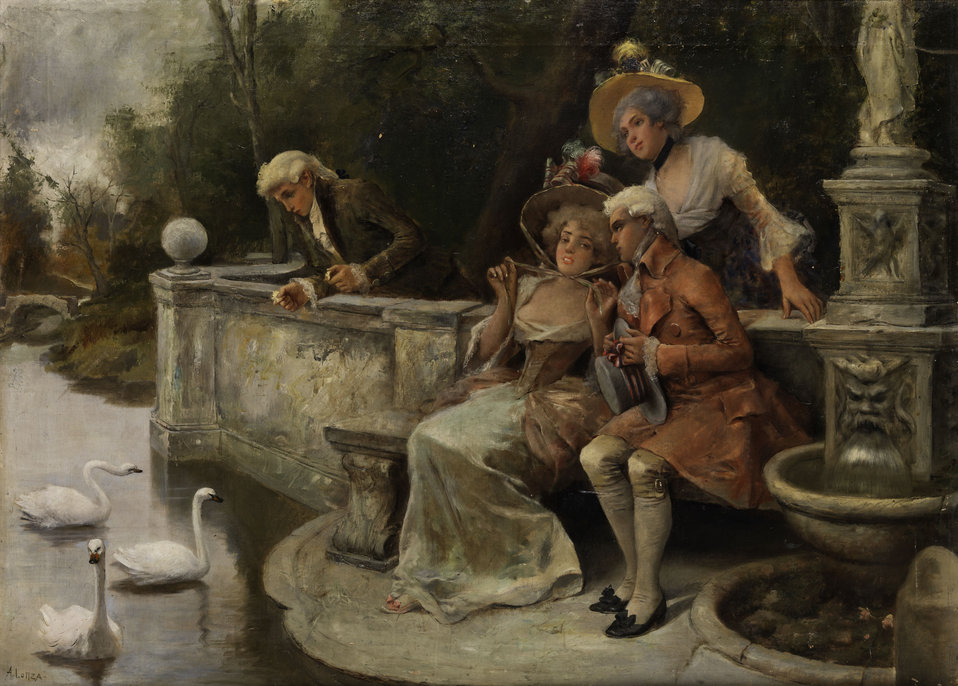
Antonio Lonza Gesellschaft im Park beim Schwänefüttern